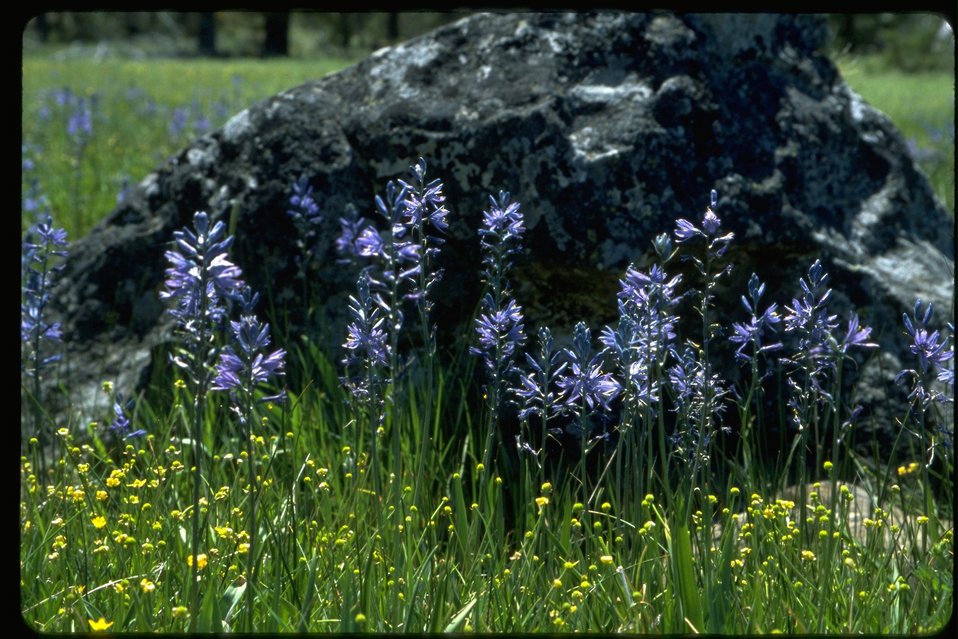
Medium shot of Blue Camas against rock.